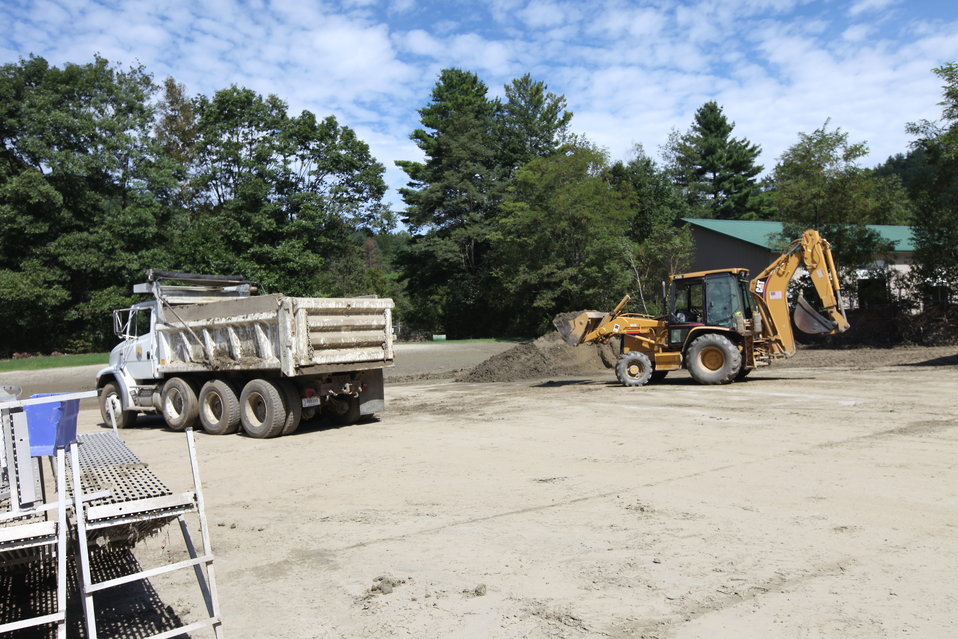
Storm damage relief at White River NFH

Heavy equipment operators came from other USFWS stations to help clean up.